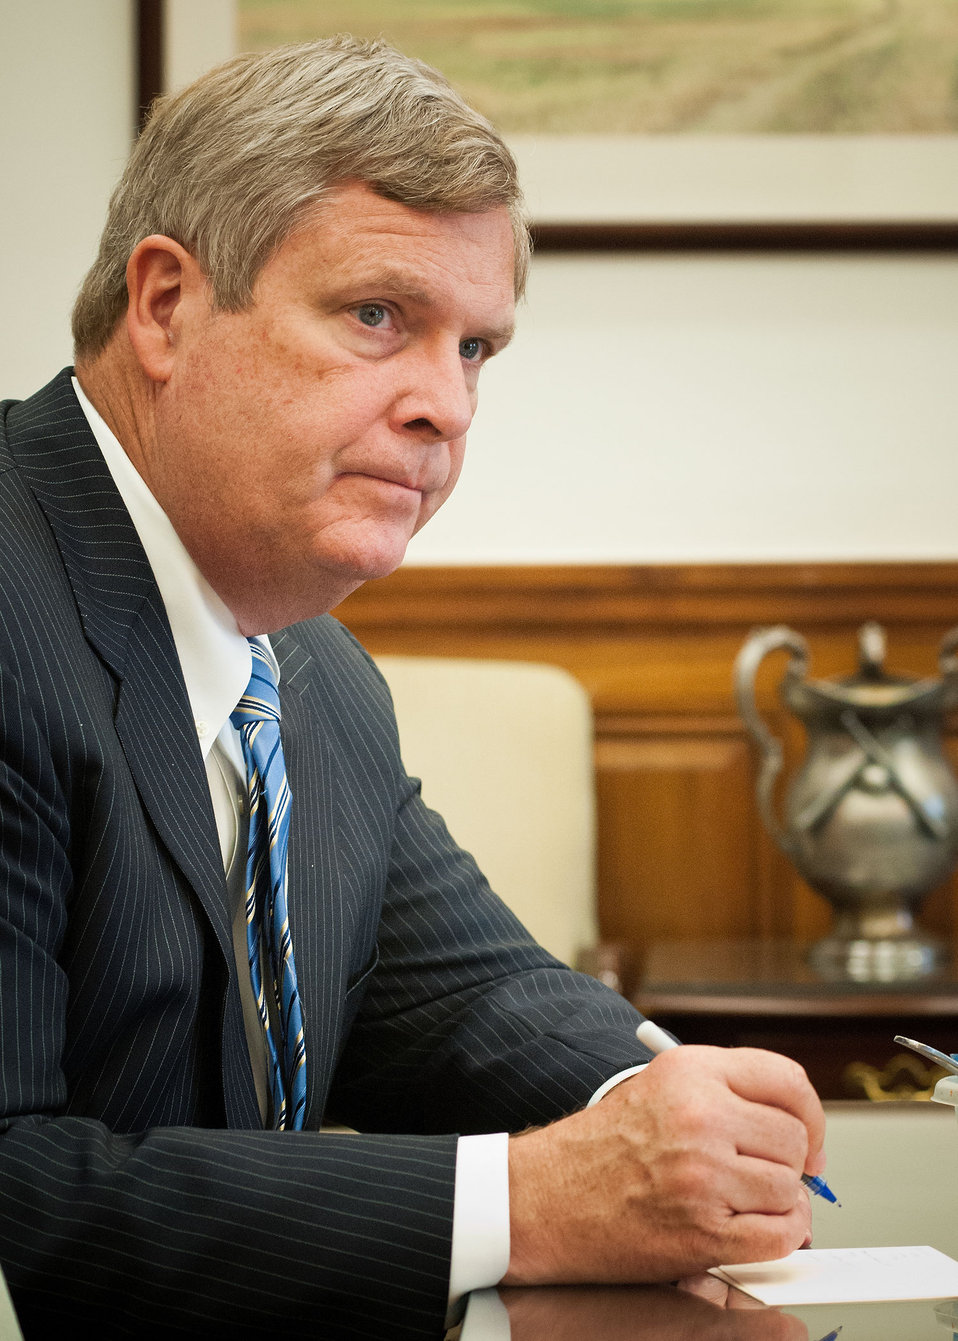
Agriculture Secretary Tom Vilsack has lunch with U.S. Department of Agriculture (USDA) employees to discuss the roles they play within the Department at a Brown Bag Lunch in Washington, D.C. on Wednesday, Sept. 26, 2012. Secretary Vilsack holds the occasional Brown Bag Lunches to gain information and knowledge to assist in the administration of the affairs and programs of the Department, and to thank the employees for their diligent work to the Department and as public servants.